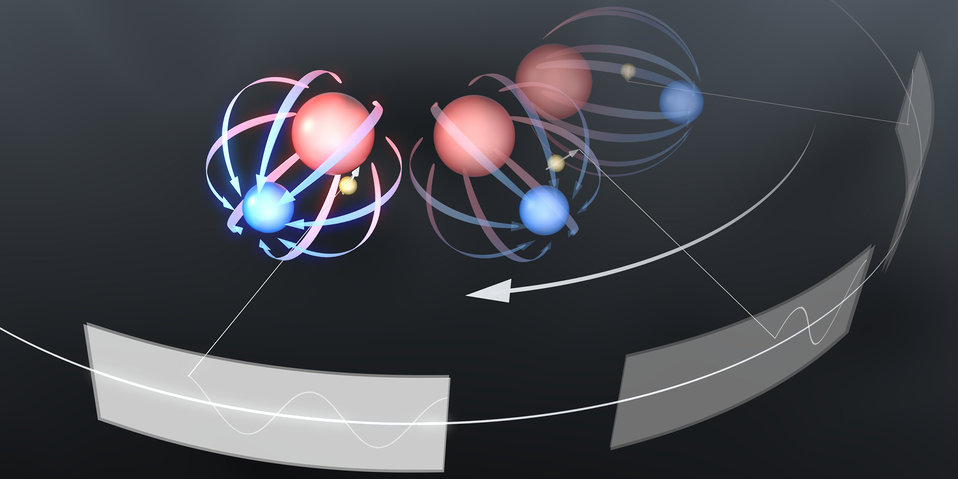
JILA 'Spinning Trap' for eEDM measurement

Artist's conception of JILA's new technique for measuring the electron's roundness, or electric dipole moment (EDM). The method involves trapping molecular ions of hafnium fluoride (red and blue spheres, respectively) in spinning electric and magnetic fields. Researchers measure changes over time in the 'spin' direction of the molecules' unpaired electrons (arrows in yellow spheres), which act like tiny bar magnets. Specific patterns in the rate of change, reflecting alterations in the gap between two magnetic energy levels in the molecules, would indicate the existence and size of an EDM.